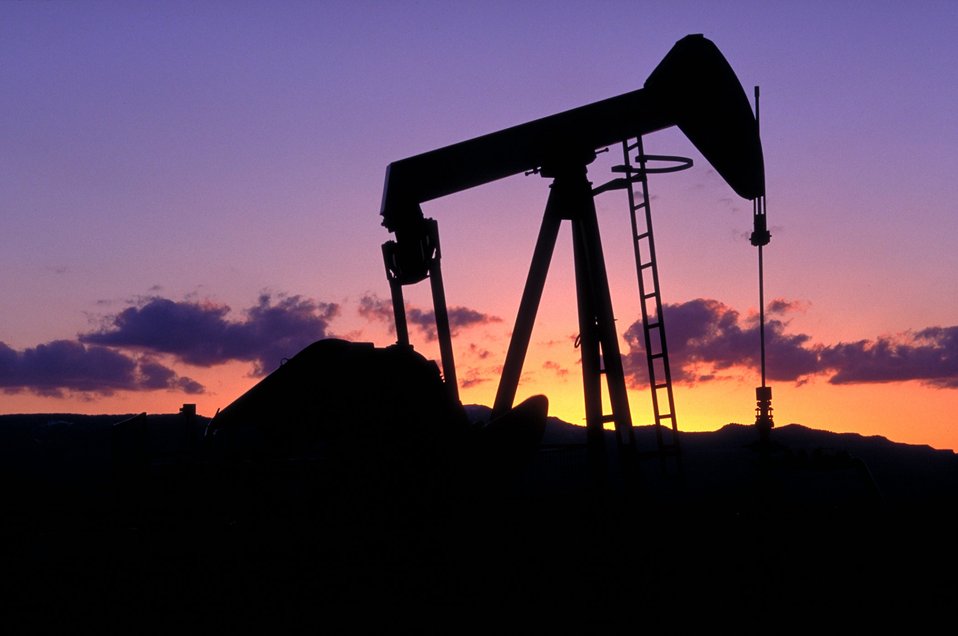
Pump unit producing coal bed methane near Price, Utah.